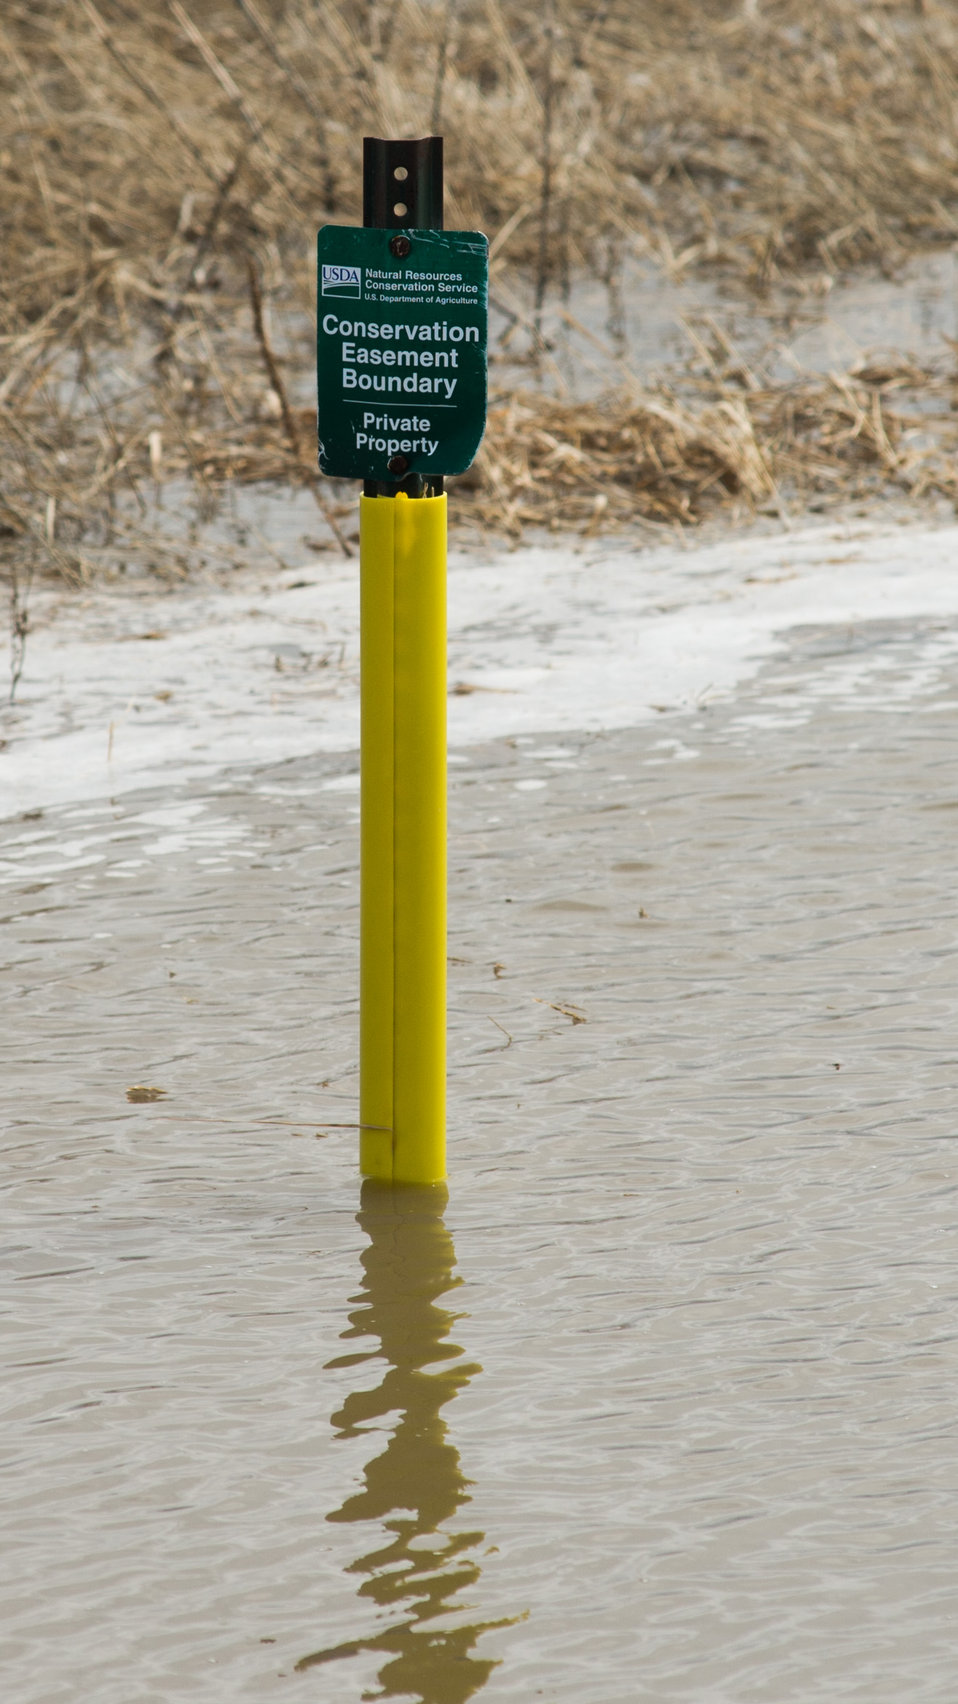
Conservation Easement Boundary markers identify Neil Hanson's Emergency Watershed Protection (EWP) Flood Plain Easement located east of Bowesmont, in the Red River basin of ND, Wednesday May 1, 2013. To learn about the Red River Basin Initiative, see www.mn.nrcs.usda.gov/news/features13/RRBI.html.